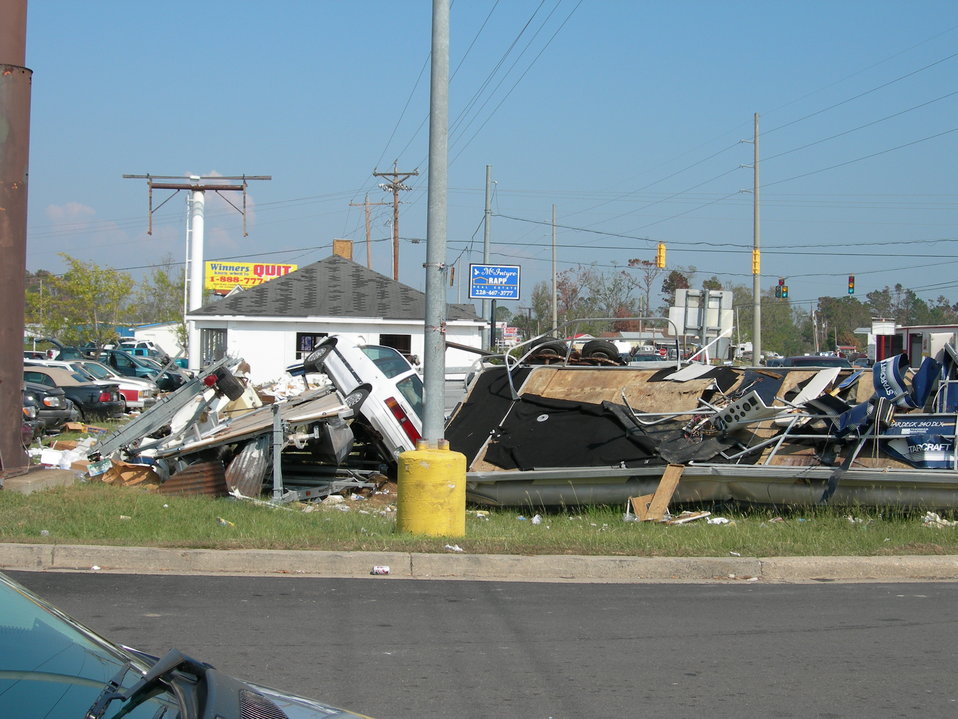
Buildings in New Orleans, LA, were demolished by hurricane Katrina’s 20-foot storm surge that overwhelmed the city’s levees. Hurricane Katrina was the 6th strongest hurricane in U.S. history and the 5th deadliest. Katrina made landfall on Monday morning, August 29, 2005 as a Category 3 hurricane with sustained winds of 125 mph with over a 20-foot storm surge. Katrina caused catastrophic damage over 90 thousand square miles across Louisiana with an estimated $75 billion dollars in damage. The total economic impact to the Gulf Coast was estimated at over $150 billion. 80% of New Orleans, LA, was underwater with some areas more than 20 feet deep. Less than a month later southern Louisiana was struck by a second Category 3 hurricane Rita inflicting more damage in the southwestern areas of Louisiana adding an addition $12 billion worth of damage to the already beleaguered state. The U.S. Army Corps of Engineers (USACE) under the auspices of the Federal Emergency Management Agency (FEMA) was the lead service in providing assistance to the citizens of Louisiana. The U.S. Department of Agriculture (USDA) supplied emergency food aid, emergency loan assistance to farmers and home owners, and USDA personnel from around the nation volunteered their time and muscle to aid in the recovery operations. USDA Photo Terri Teuber.